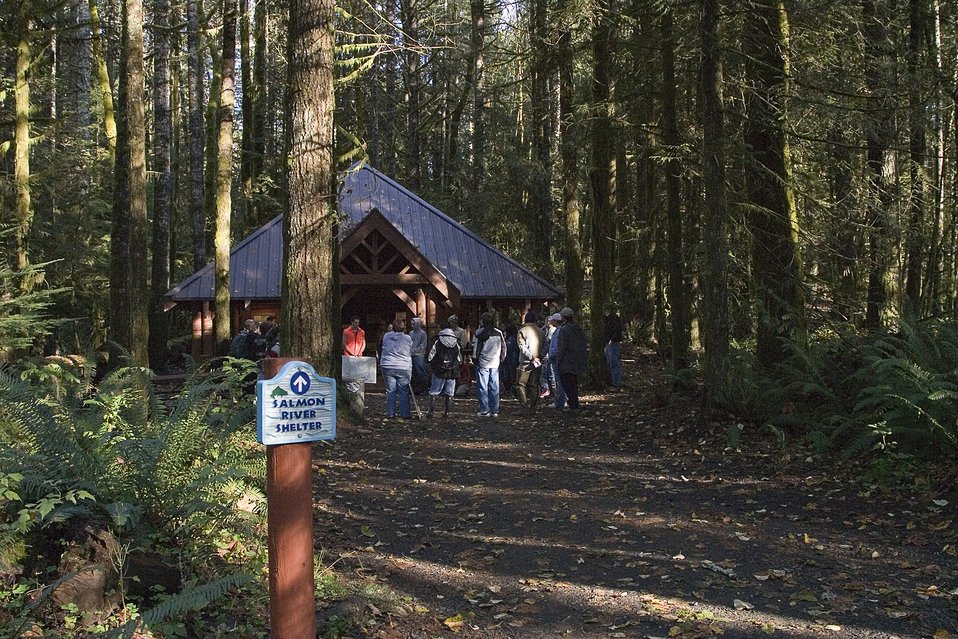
The Salmon River Shelter is used during the spring and fall by Wolftree and other groups for environmental education. Here the Reynolds Natural Resources Academy 12 and 11th grade students summarize there days activities.